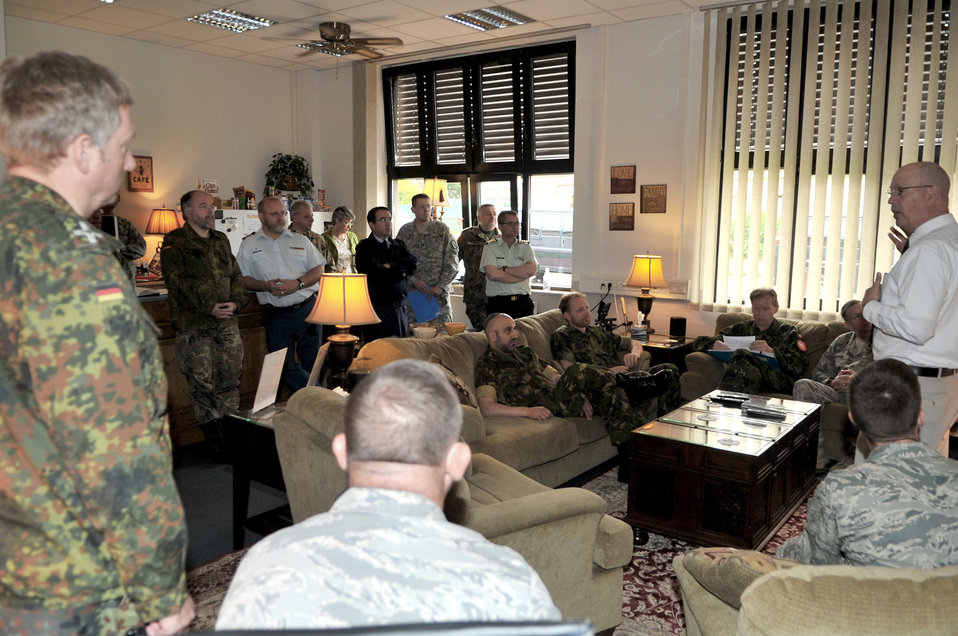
NATO AAFCCC 2011

Rick Deppe (right), the Airmen Ministries coordinator for Club 7, briefs Chaplain (Maj. Gen.) Cecil R. Richardson and other NATO chaplains June 16, 2011, during the NATO Allied Air Force Chaplains Consultative Committee Conference at Ramstein Air Base, Germany. Chaplain Richardson is the U.S. Air Force chief of chaplains.